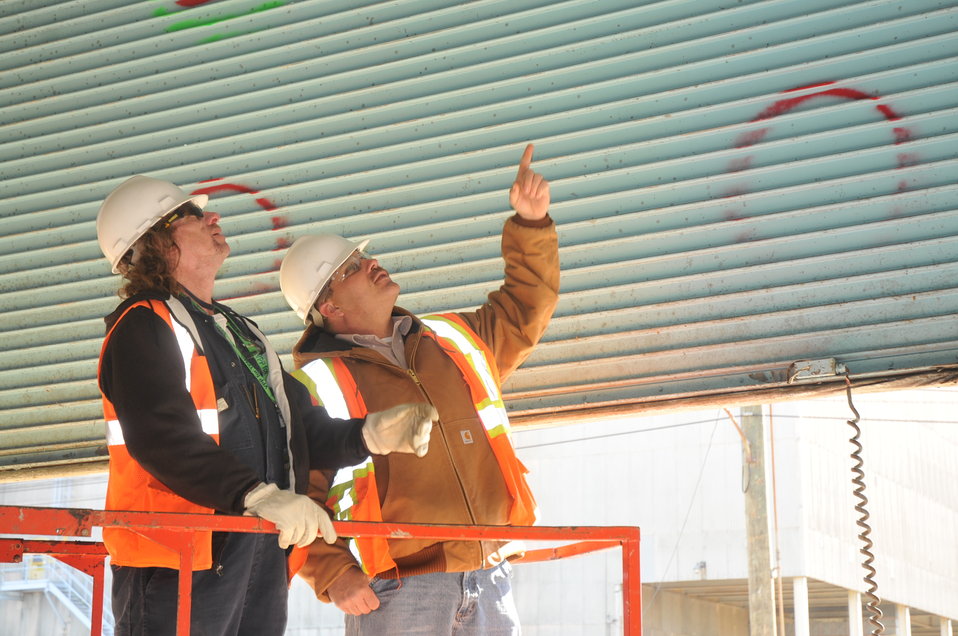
Portsmouth - Joe Wise

Joe Wise, right, points out a structural feature to LATA/Parallax Portsmouth D&D Worker Tim Souders during preparations for a facility demolition at the Portsmouth Site.